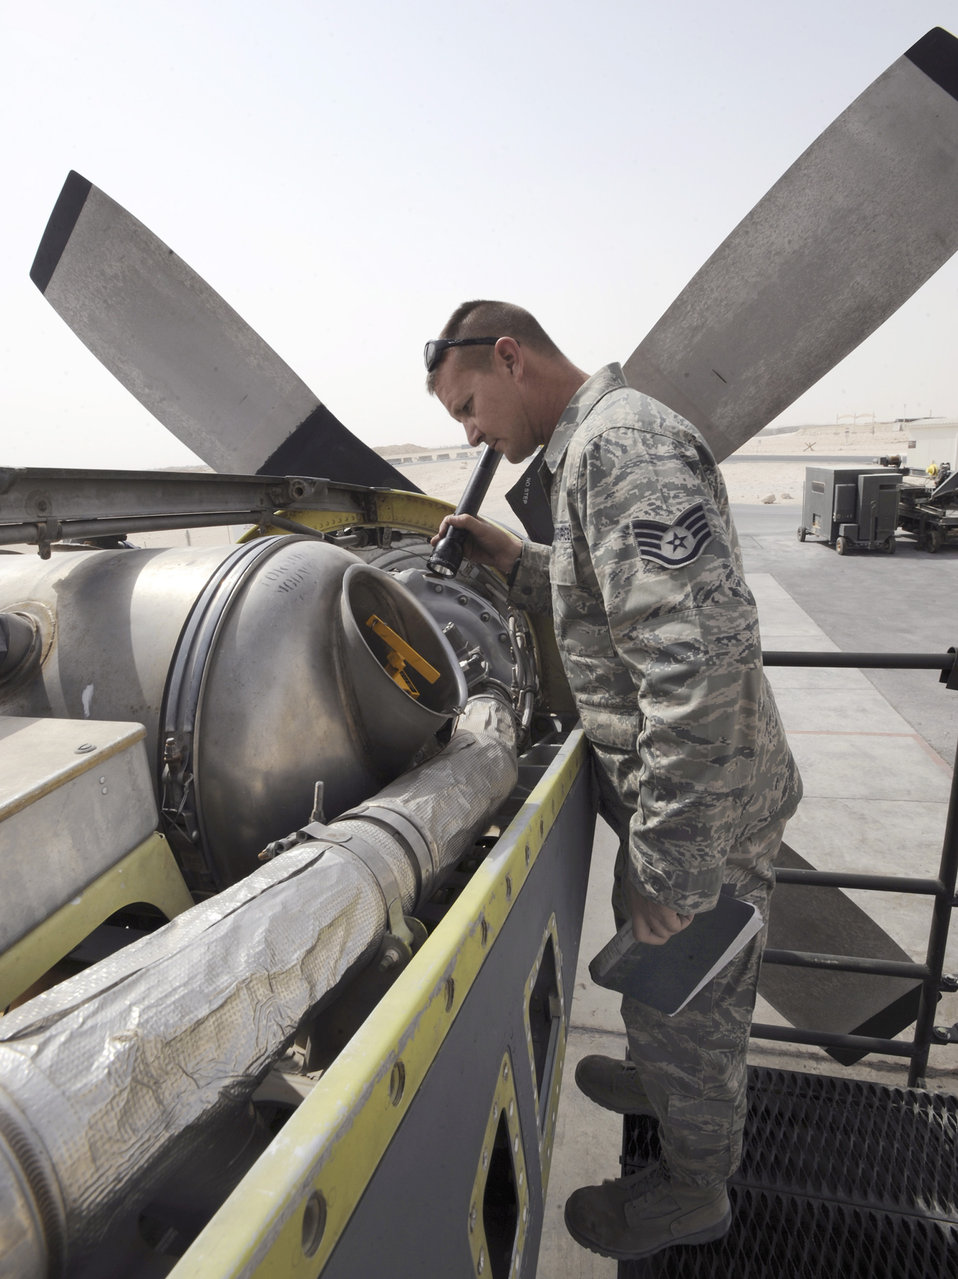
New test cell

Tech. Sgt. Richard Replinger, a turbo propulsion craftsman with the 379th Expeditionary Maintenance Squadron at an air base in Southwest Asia, performs a pre-run inspection on a C-130H Hercules engine June 14 prior to running a test on the engine. This is the only T56 test cell in the U.S. Central Command area of responsibility. The T56 enables maintainers to test engines in the AOR instead of sending them back to Ramstein Air Base, Germany. Sergeant Replinger, a native of Fayetteville, N.C., is deployed from Hurlburt Field, Fla.